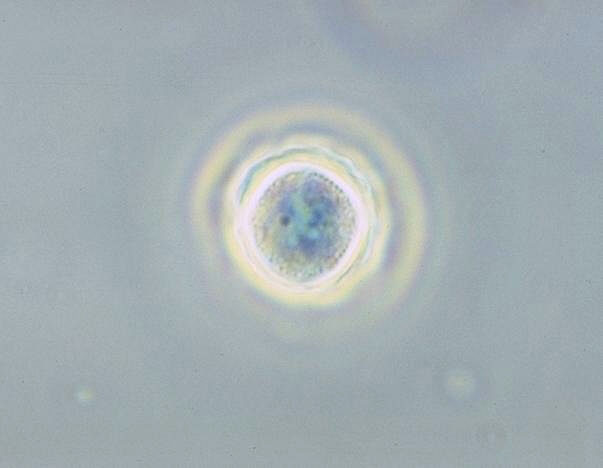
Acanthamoeba polyphaga cyst. Phase contrast.